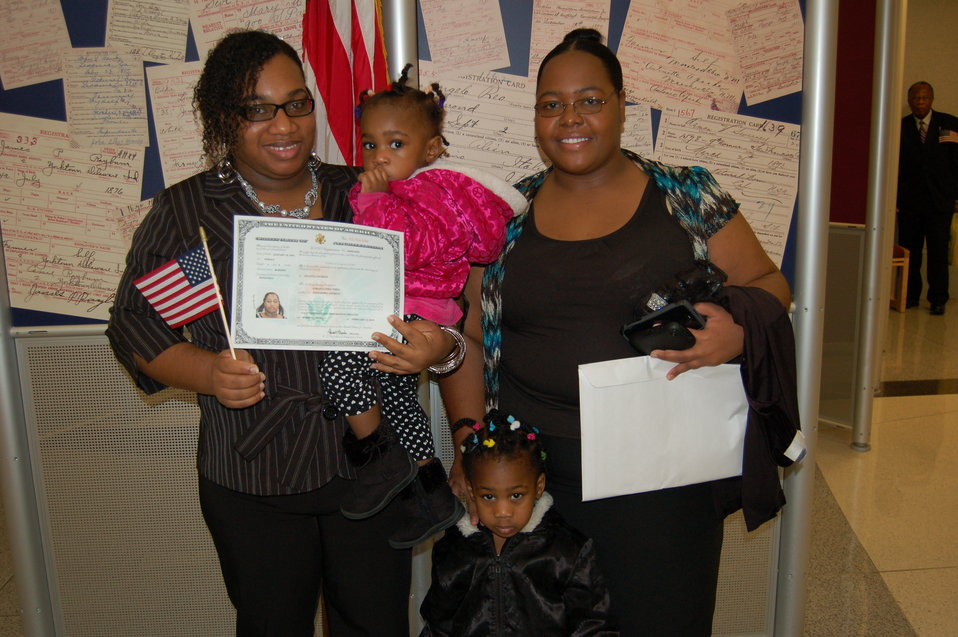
New Citizens